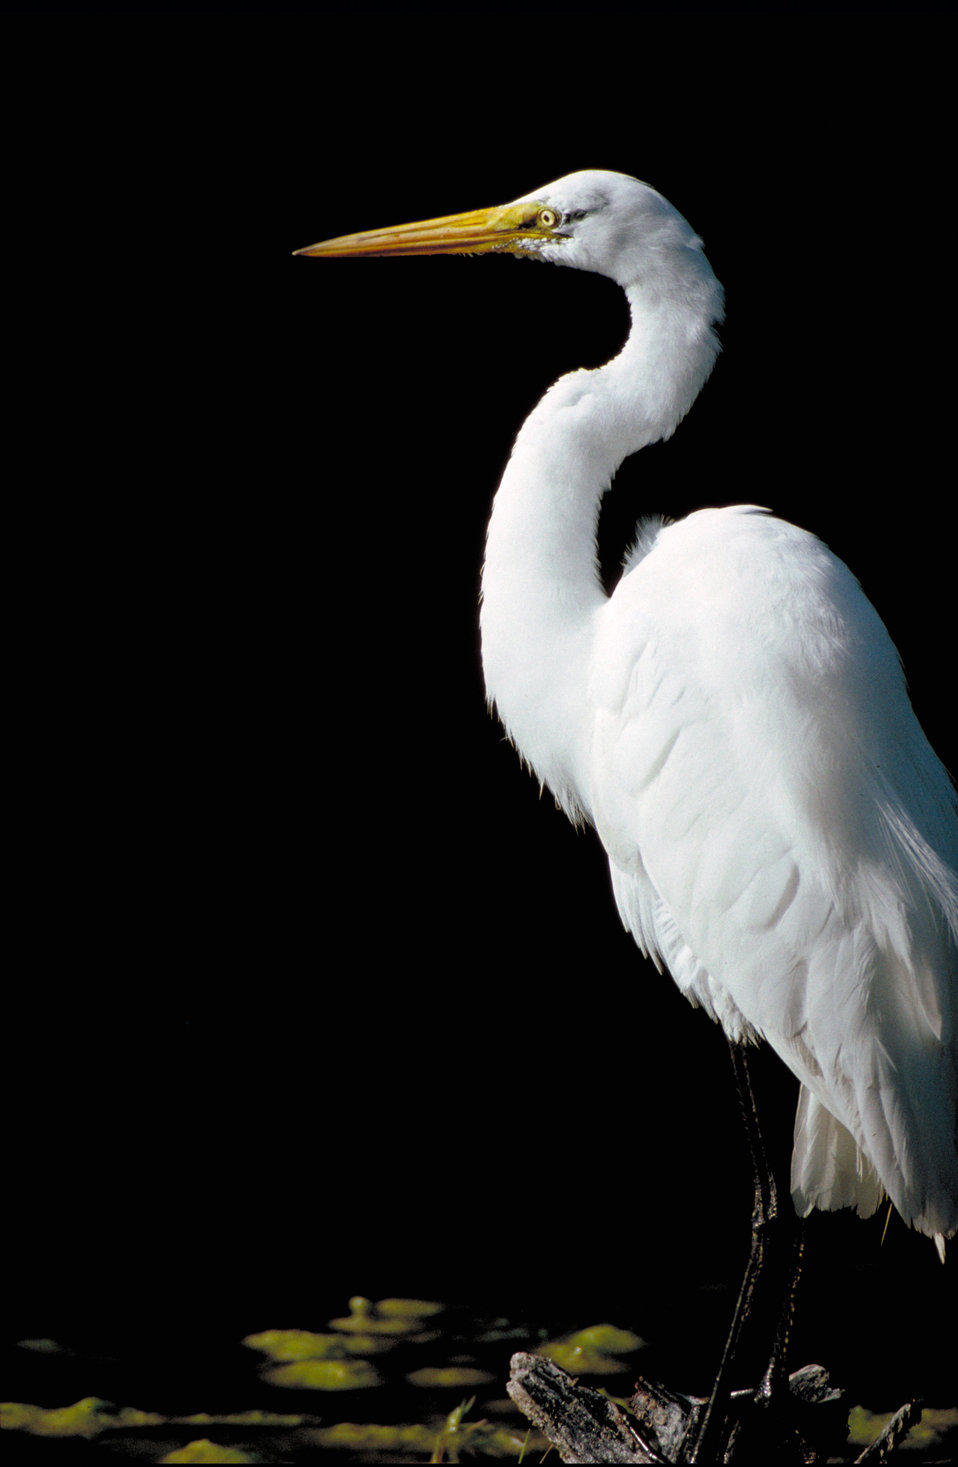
Great Egret

Scanned to Kodak CD from 35 mm original slide.